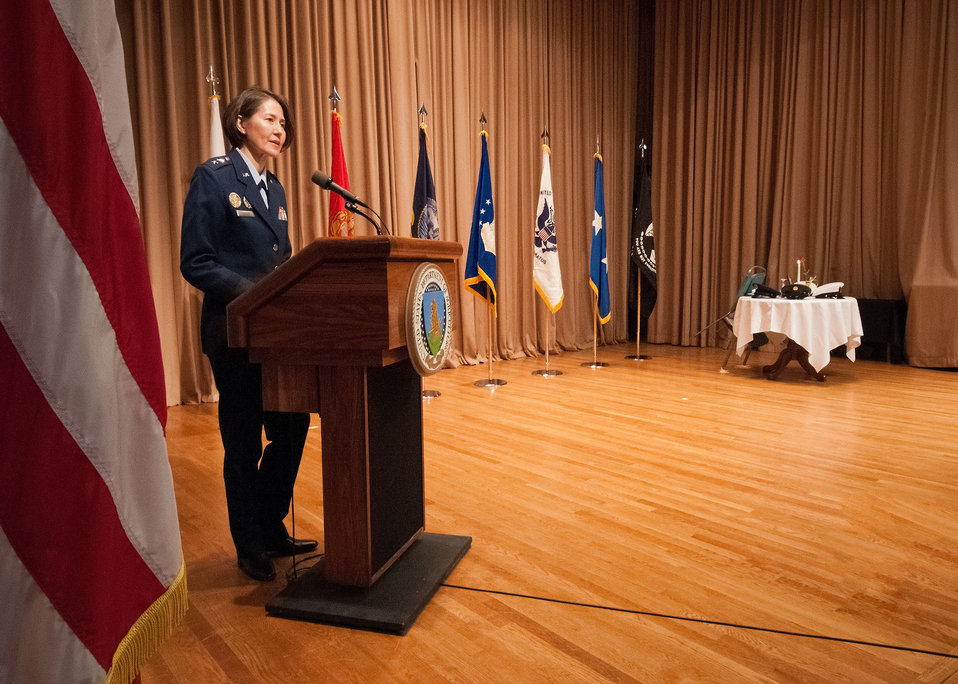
U.S. Air Force Major General Commander, Air Force District of Washington, Joint Base Andrews, MD Sharon K.G. Dunbar speaks at the U.S. Department of Agriculture's Veterans Day Observance: Honoring All Who Served, in Washington, D.C. on Wednesday, Nov. 7, 2012. The Air Force District of Washington is the Air Force voice and component to the Joint Forces Headquarters-National Capital Region.